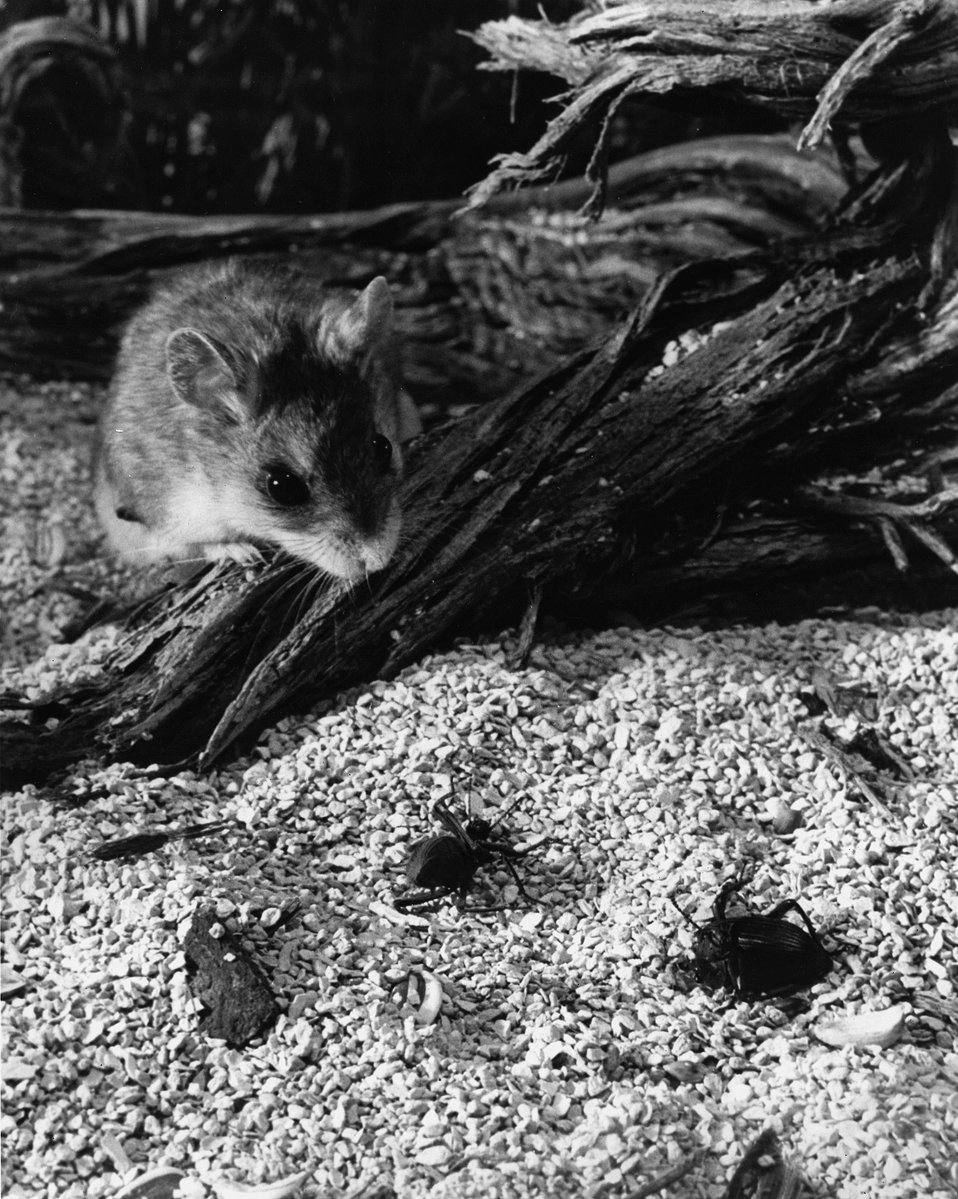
A grasshopper mouse stalks a darkling, one of the little desert rodents prime sources of food. c. 1969